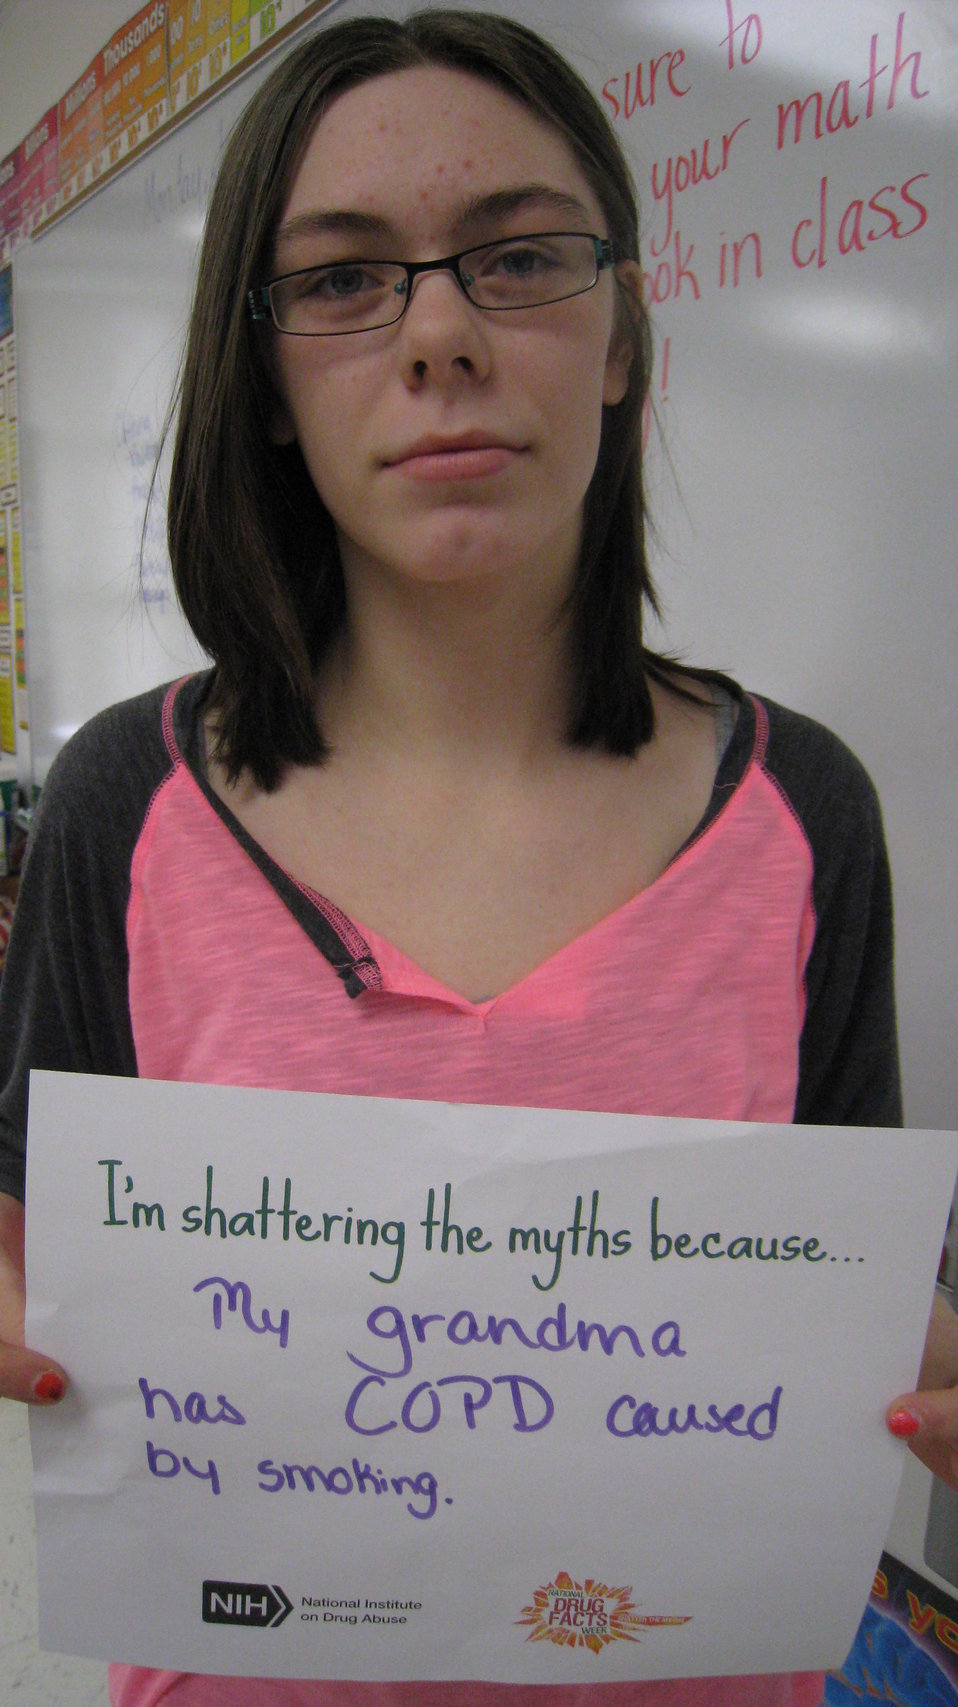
I'm Shattering the Myths Because...

Teenagers from the Van Buren County SAFE Coalition's, Youth Leadership Council (YLC) in Keosauqua, Iowa participate in various events during National Drug Facts Week, 2014.